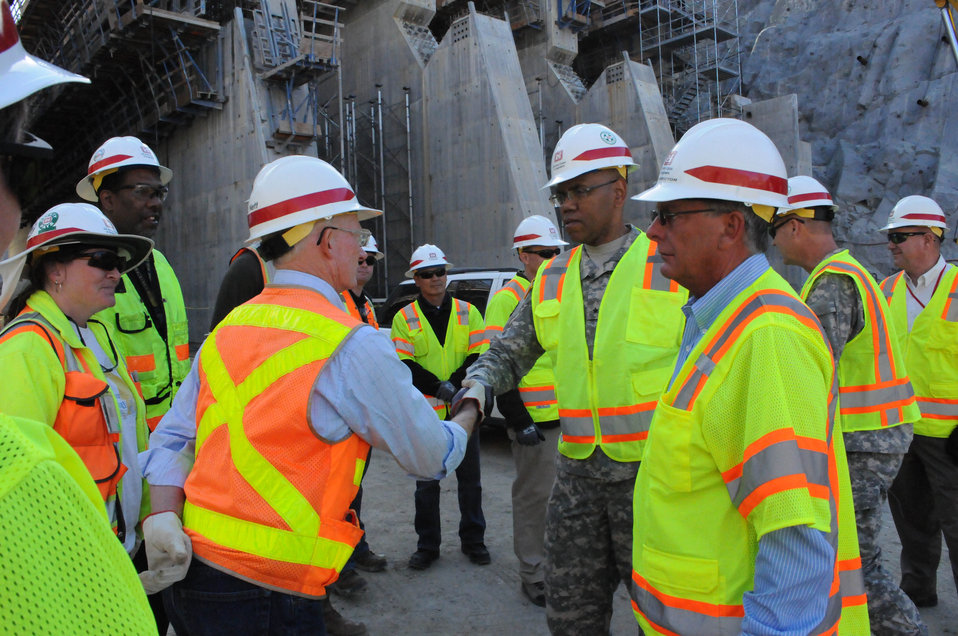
Brig. Gen. Turner tours Folsom spillway

Commanding general of the U.S. Army Corps of Engineers’ South Pacific Division, Brig. Gen. Dave Turner (center), greets staff working on the Folsom Dam auxiliary spillway in Folsom, Calif., Oct. 16, 2013 during a visit to the construction site. “It’s good to see such a diverse team of dedicated professionals who bring a range of expertise to this project,” said Turner. “There is a lot of amazing work going on here.”